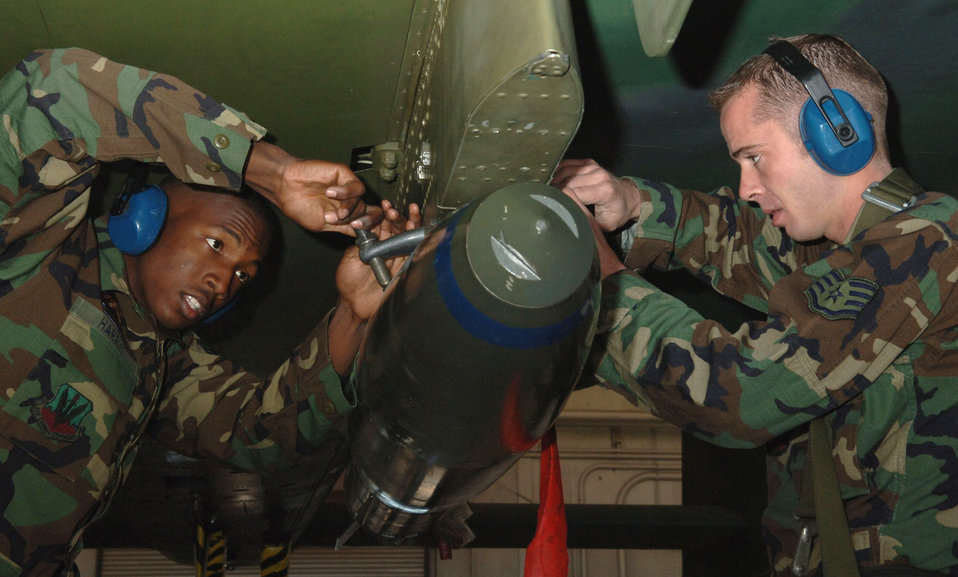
Load Crew

DAVIS-MONTHAN AIR FORCE BASE, Ariz. -- Staff Sgt. Paul Retherford and Senior Airman Samuel Harris tighten the sway braces and secure a 500-pound bomb as part of a load crew competition. Both Airmen are assigned to the 355th Aircraft Maintenance Squadron.